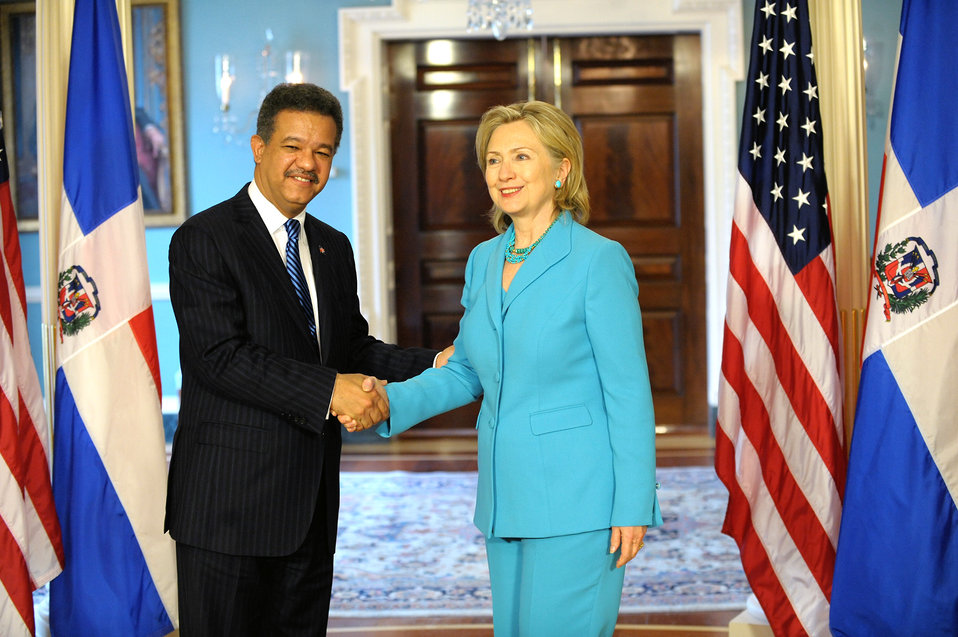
Secretary Clinton Shakes Hands With Dominican Republic President Leonel Fernandez

U.S. Secretary of State Hillary Rodham Clinton shakes hands with Dominican Republic President Leonel Fernandez following a bilateral meeting at the U.S. Department of State in Washington, D.C., on July 13, 2010.